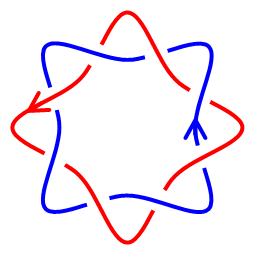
An oriented (2,4)-torus link.